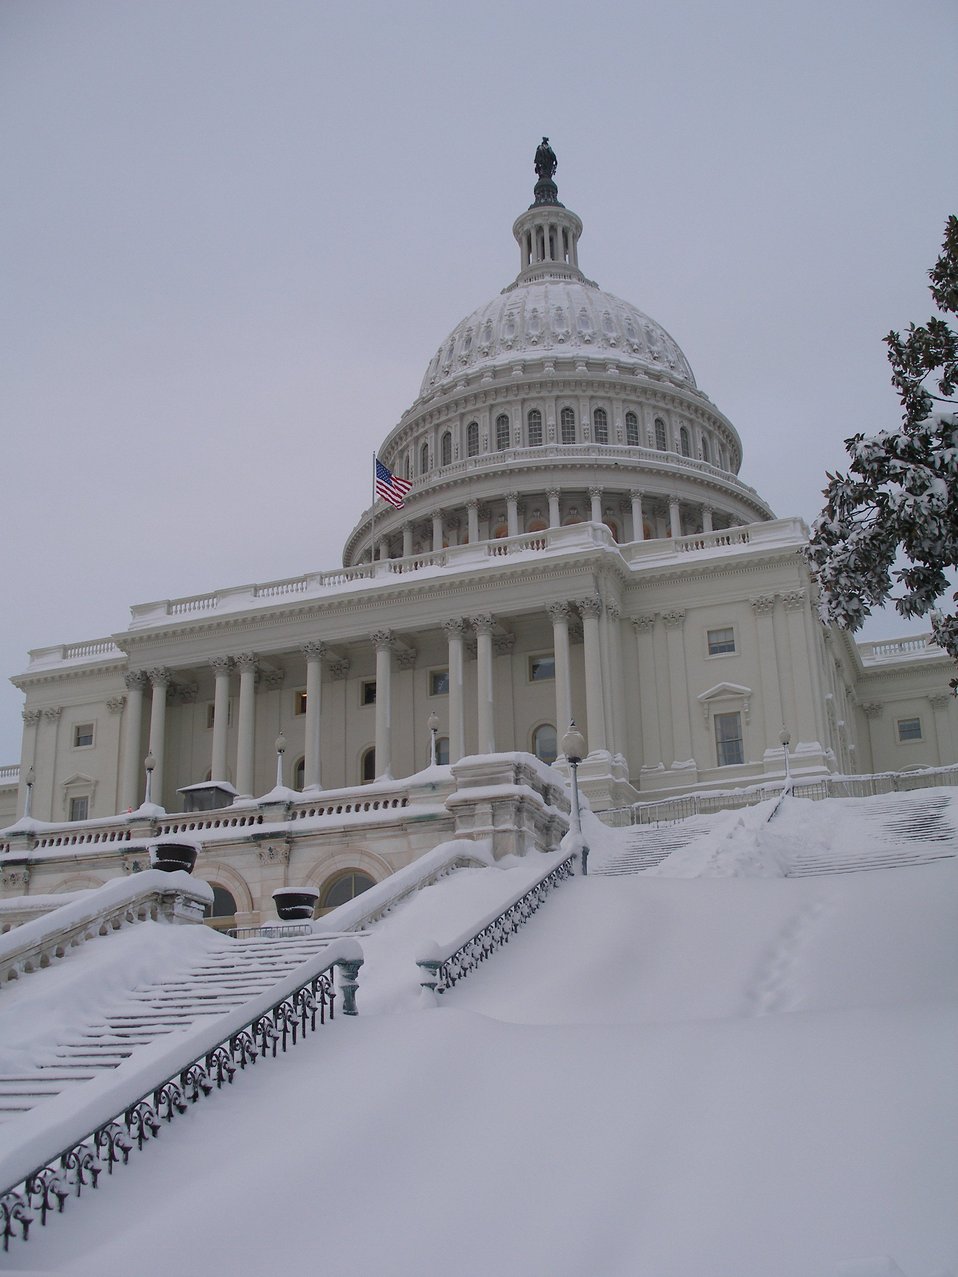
The Capitol Building adorned with snow and the Statue of Freedom. Futile attempts to clear the steps of snow are seen by the various sections of steps that are partially cleared while others are totally buried.